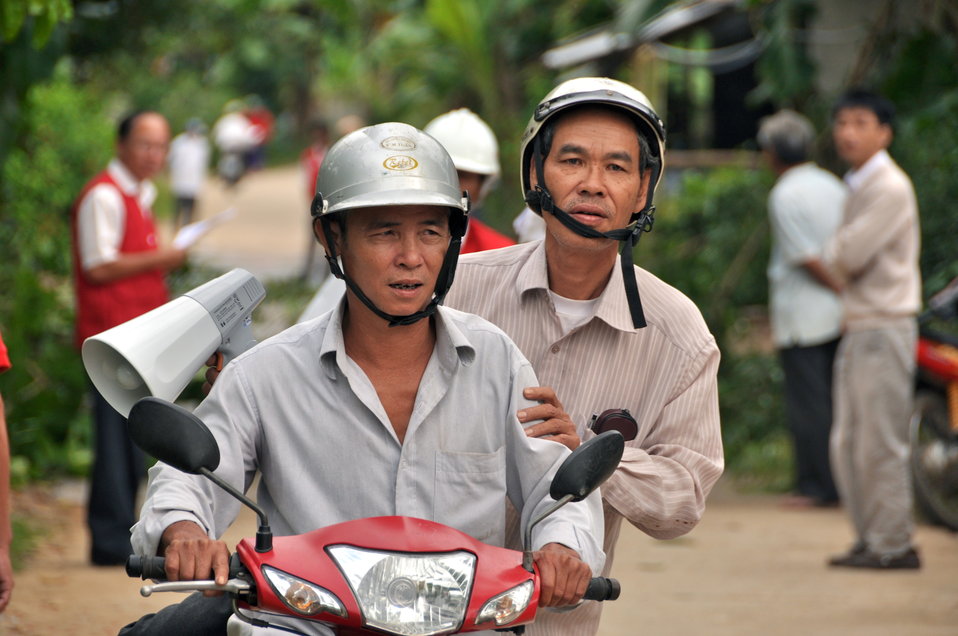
USAID and Save the Children support community evacuation drill and emergency preparedness in central Vietnam

Loc An Commune, Phu Loc District, Thua Thien Hue Province
December 4, 2012, Photo: Richard Nyberg, @USAIDVietnam